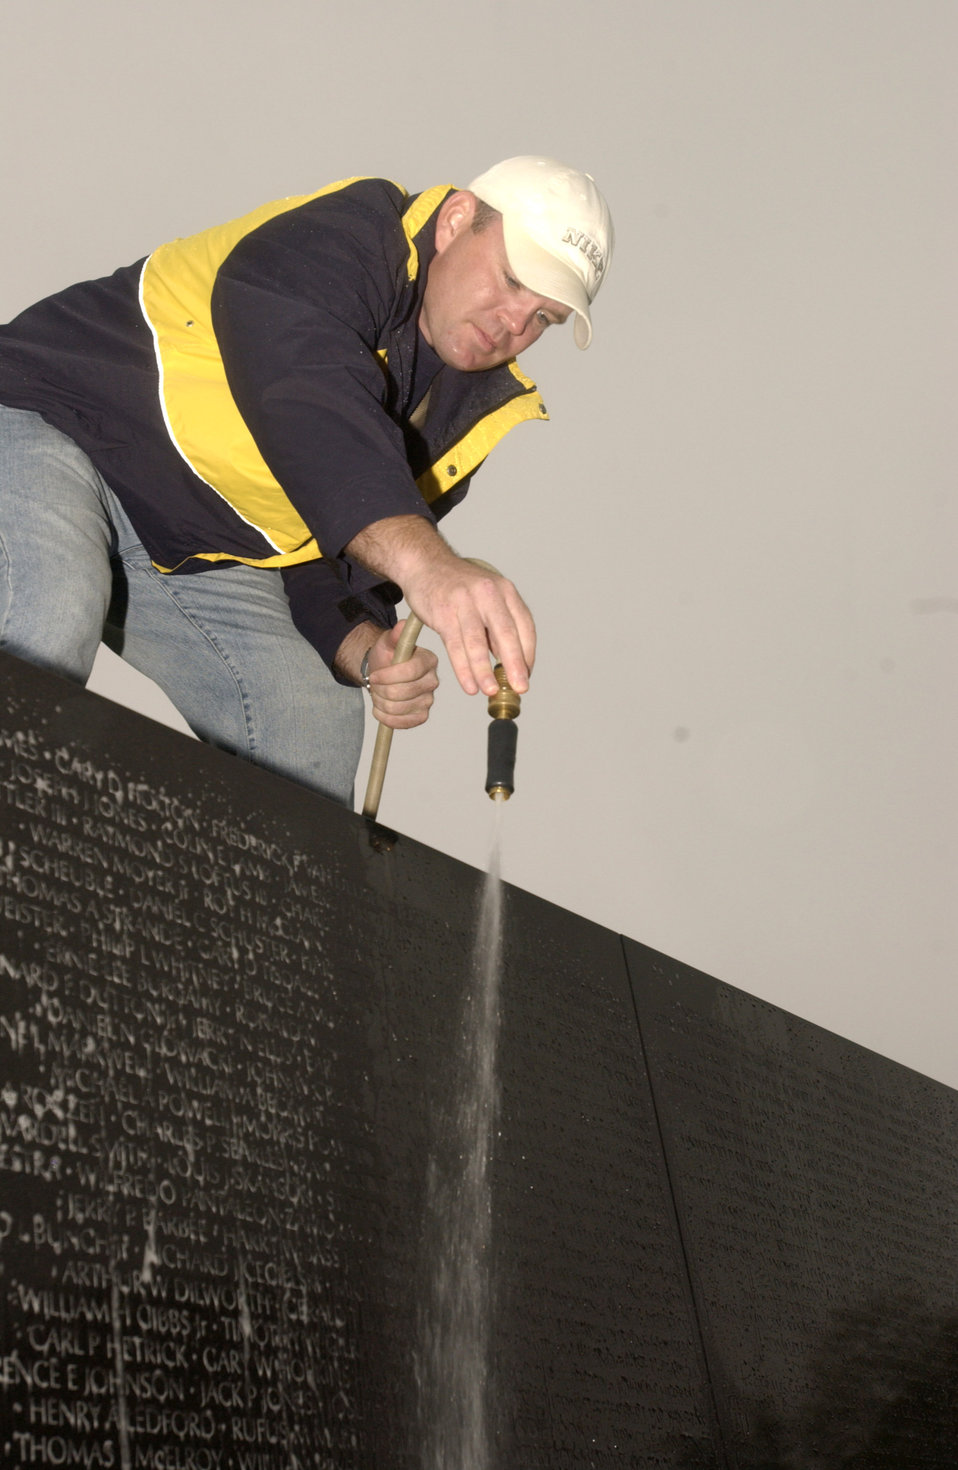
AFSA members clean Vietnam Memorial

Master Sgt. Dave Stinard rinses the Vietnam Veterans Memorial on Saturday, April 22, 2006. More than 140 members of the Air Force Sergeants Association met in the nation's capital to clean the memorial early in the morning before tourists arrived. Sergeant Stinard is the AFSA chapter president at Charleston Air Force Base, S.C.